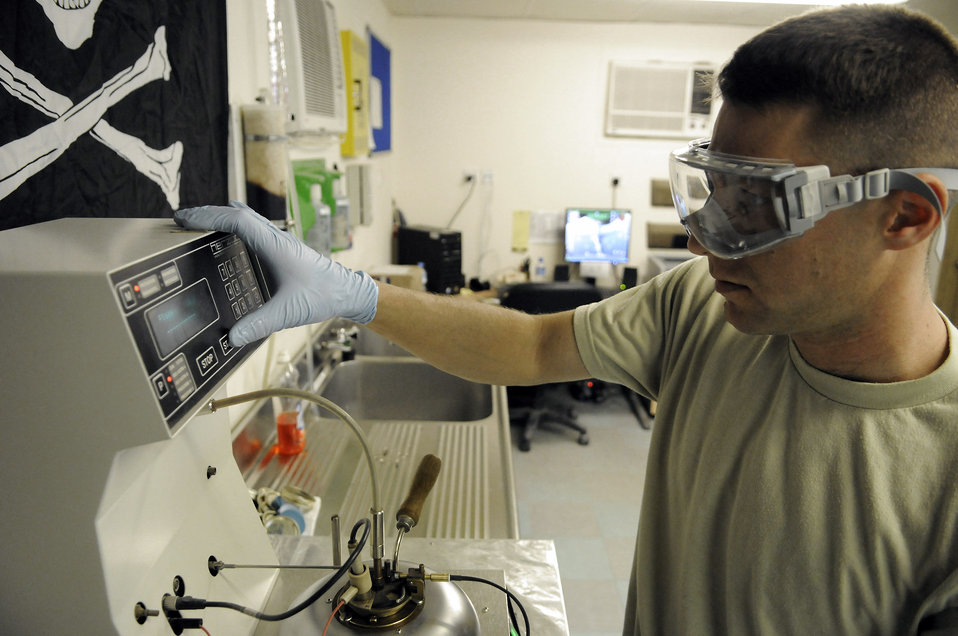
Fuel quality

Staff Sgt. Ronald Gasper conducts a flash point test Dec. 8 at an air base in Southwest Asia. The flash point test is used to determine the temperature at which the fuel will ignite. The fuel is slowly warmed and every 2 degrees an ignition coil is briefly exposed over the fuel to identify how hot the fumes must be to ignite. Sergeant Gasper is a fuels lab technician assigned to the 379th Expeditionary Logistics Readiness Squadron and deployed from Scott Air Force Base, Ill. He is a native of Omaha, Neb.